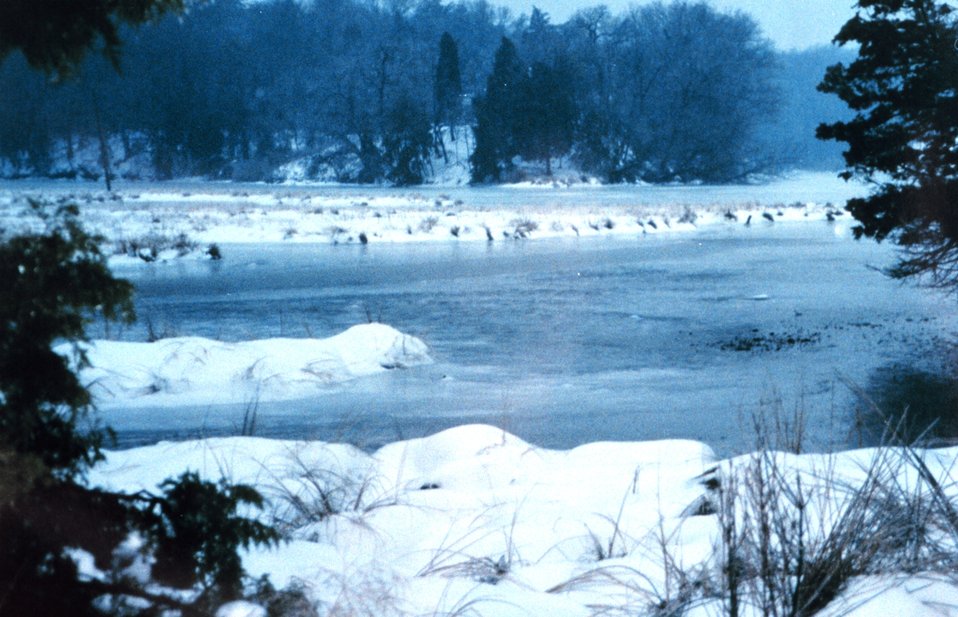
Patuxent River marsh in winter.